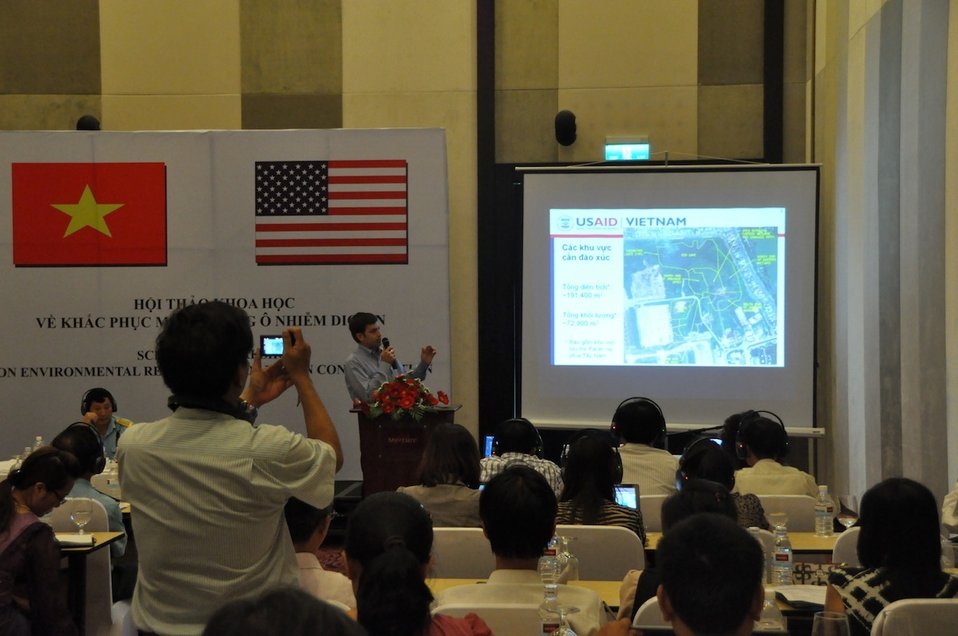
Scientific Workshop on Environmental Remediation of Dioxin Contamination at Danang Airport

August 8, 2012